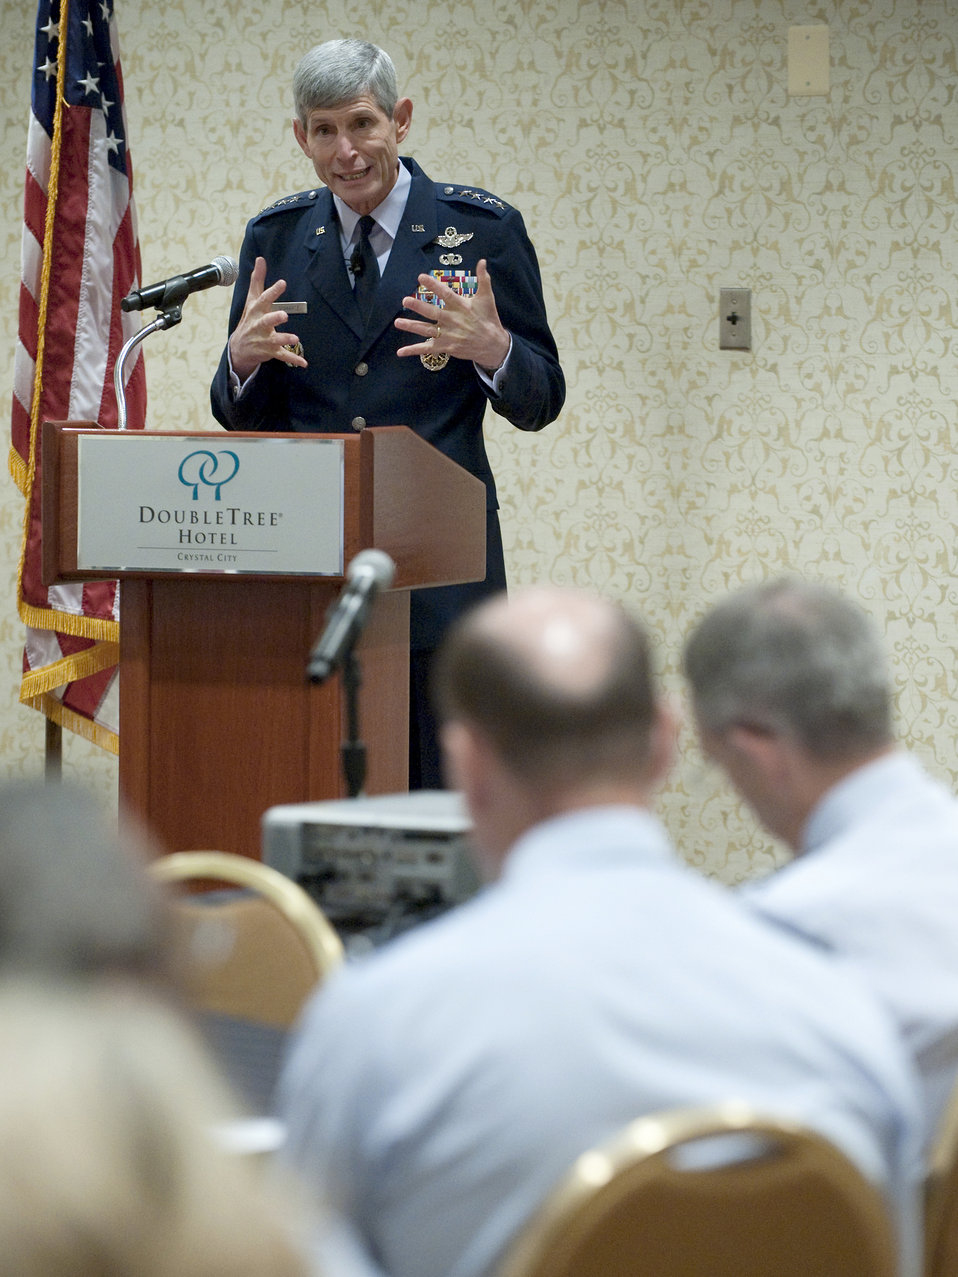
Diversity Working Group

Air Force Chief of Staff Gen. Norton Schwartz addresses the attendees of the Air Force Diversity Senior Working Group Oct. 18, 2010, in Washington, D.C. The group met Oct. 17 through 18, and focused on developing a performance-based leadership strategy to leverage the unique qualities of all Airmen.